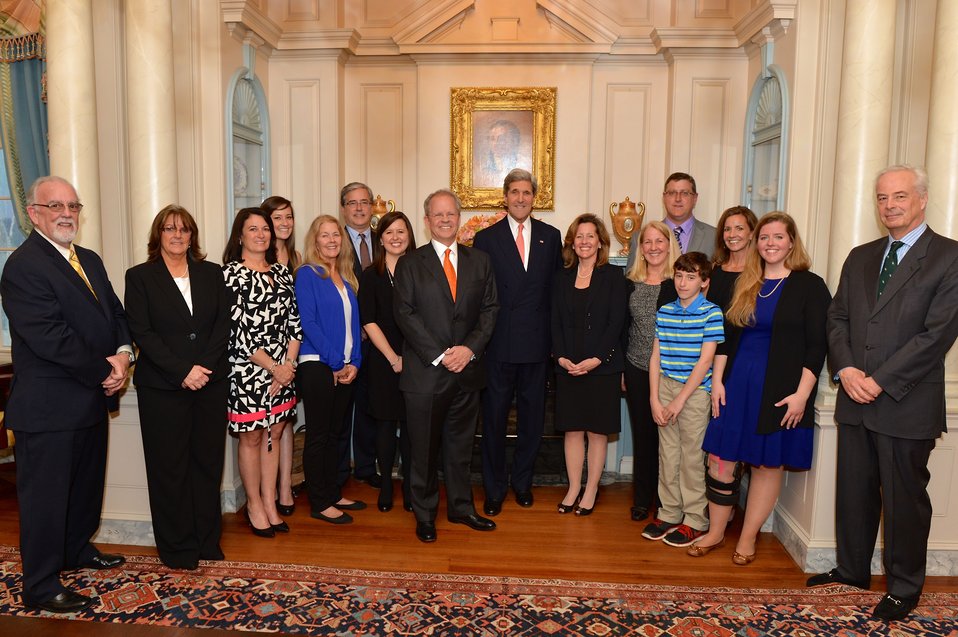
Secretary Kerry With Ambassador Broas and His Family, and Ambassador Bekink

U.S. Secretary of State John Kerry poses for a photo with U.S. Ambassador to the Netherlands Tim Broas and his family, as well as Dutch Ambassador to the U.S. Rudolf Simon Bekink, at Ambassador Broas' swearing-in ceremony at the U.S. Department of State in Washington, D.C., on April 10, 2014.